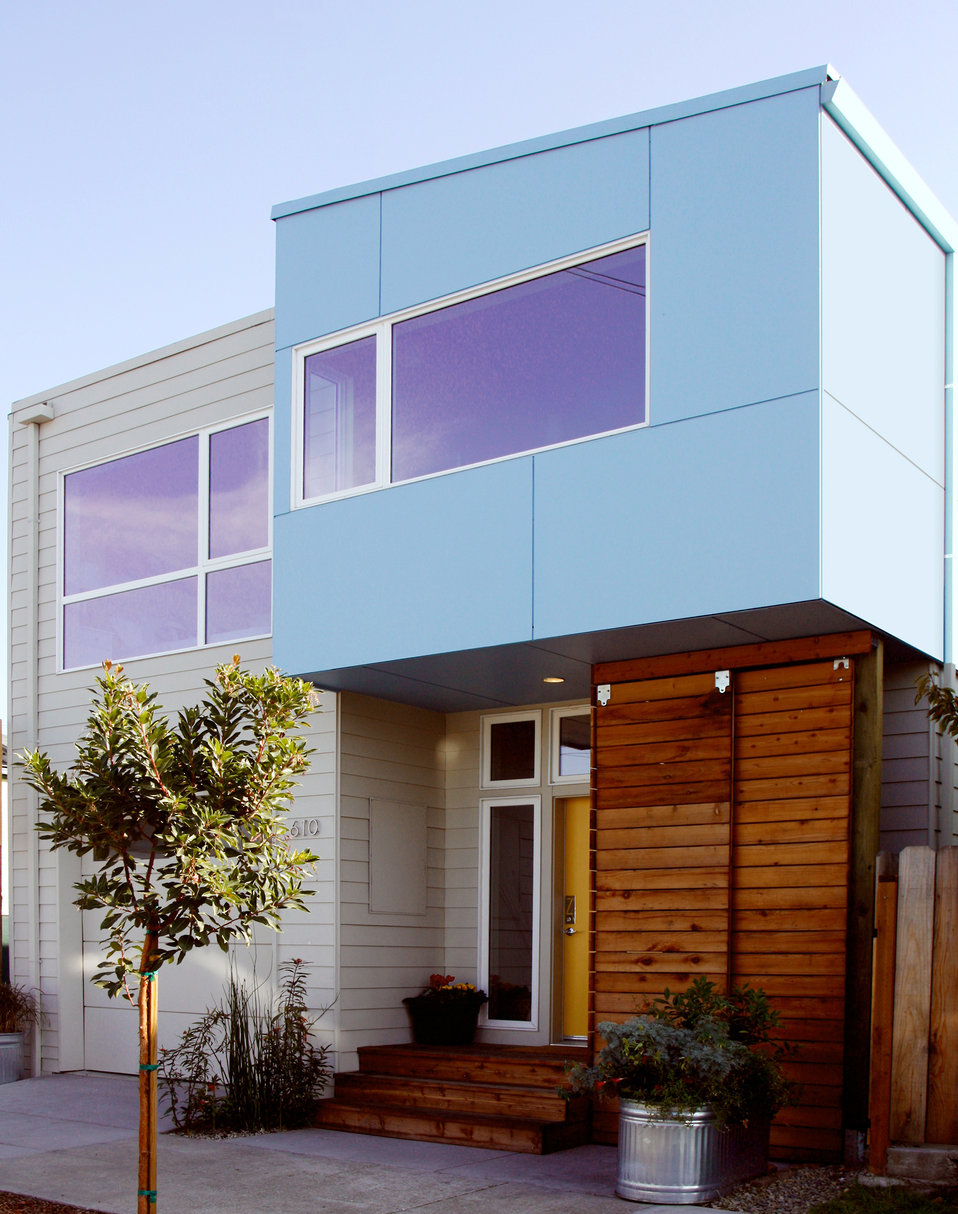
Green businesses

This energy efficient modular home, built by workers at ZETA Communities, won Green Builder magazine's home of the year award. ZETA's factory at the former McClellan Air Force Base, Calif., can produce two townhouses per day.